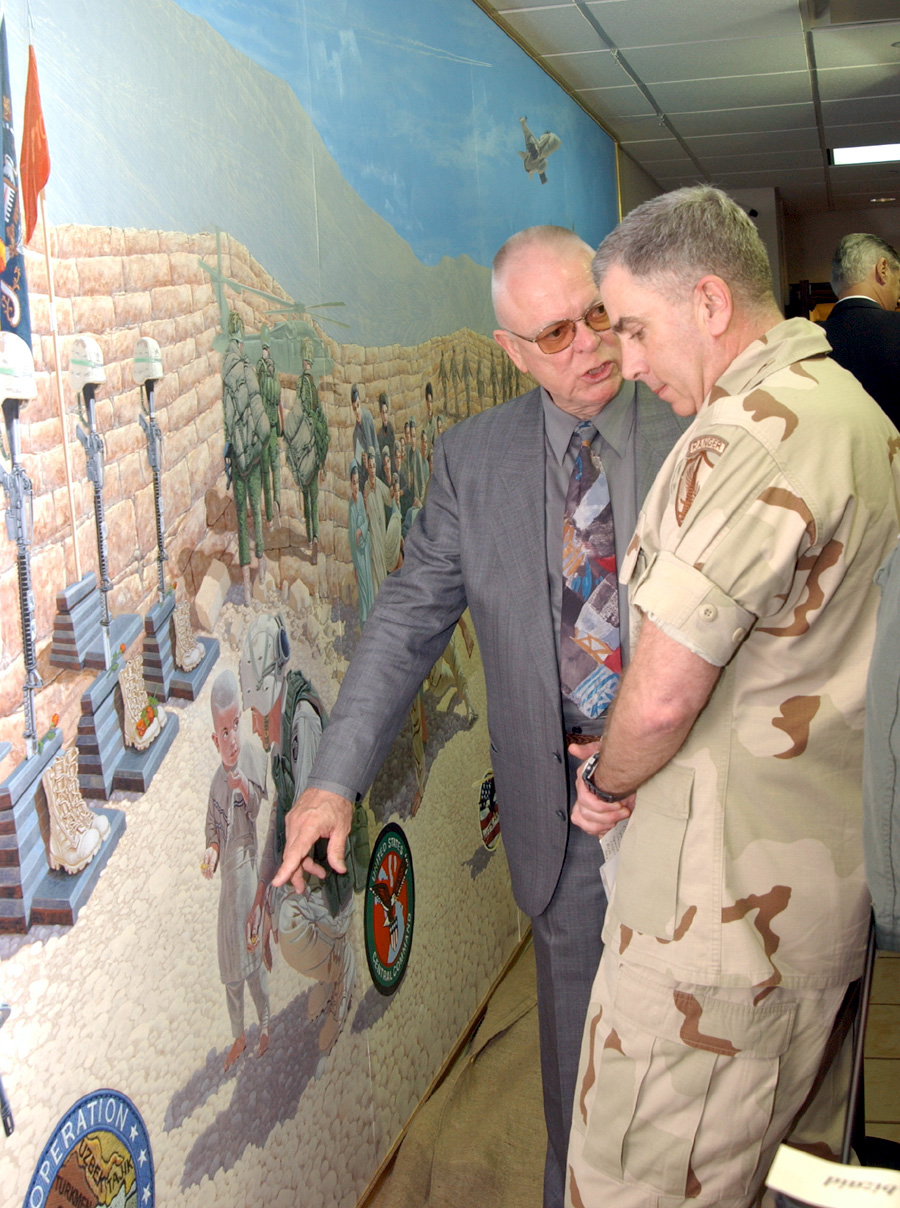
Mural unveiled at CENTCOM

MACDILL AIR FORCE BASE, Fla. -- Artist Stewart Wavell-Smith shows Army Gen. John P. Abizaid, U.S. Central Command commander, some of the images portrayed in the 8-foot-tall by 28-foot-long Enduring Freedom Mural that inspired him while he spent time in Afghanistan during Operation Enduring Freedom. The Enduring Freedom Mural was unveiled at the U.S. CENTCOM headquarters here Jan. 30.